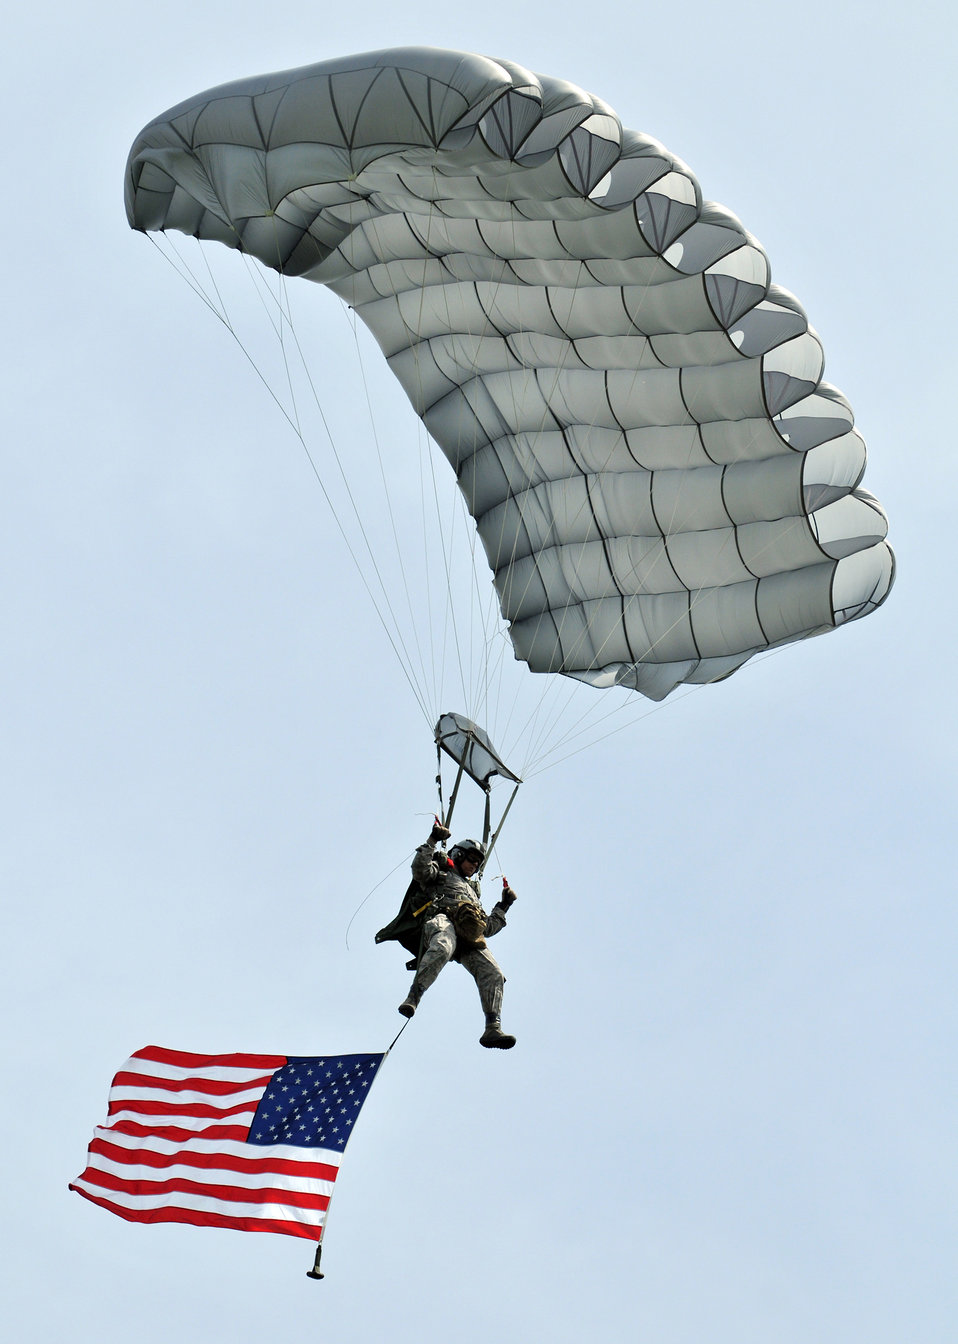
Airmen commemorate D-Day

A member of the 321st Special Tactics Squadron flies the American flag June 5, 2010, over the famous